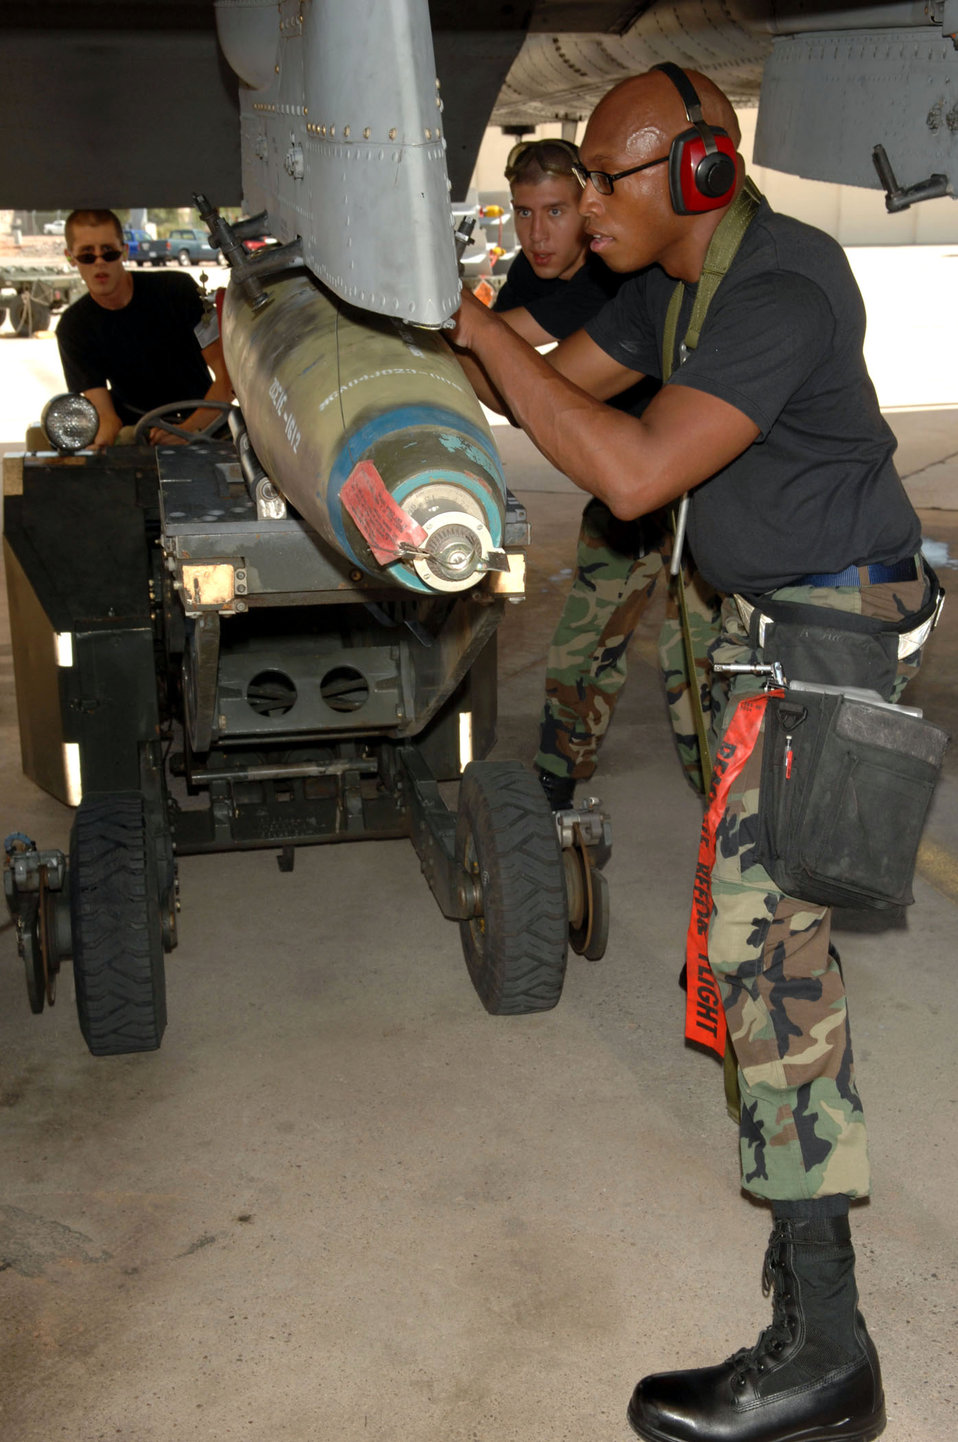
Load crew competition

Staff Sgt. Roland Harvey (front) and Airman 1st Class Brandon Hackney ensure the firing pin wire of an MK-82 is properly aligned to an A-10 Thunderbolt II, as Airman 1st Class Mark Robinson mans the jammer carrying the weight of the bomb until is properly secured to the aircraft. The Airmen are assigned to the 357th Aircraft Maintenance Unit. They were competing in the quarterly load crew competition July 20 at Davis-Monthan Air Force Base, Ariz. The event is used to boost group morale while enhancing warfighting skills.